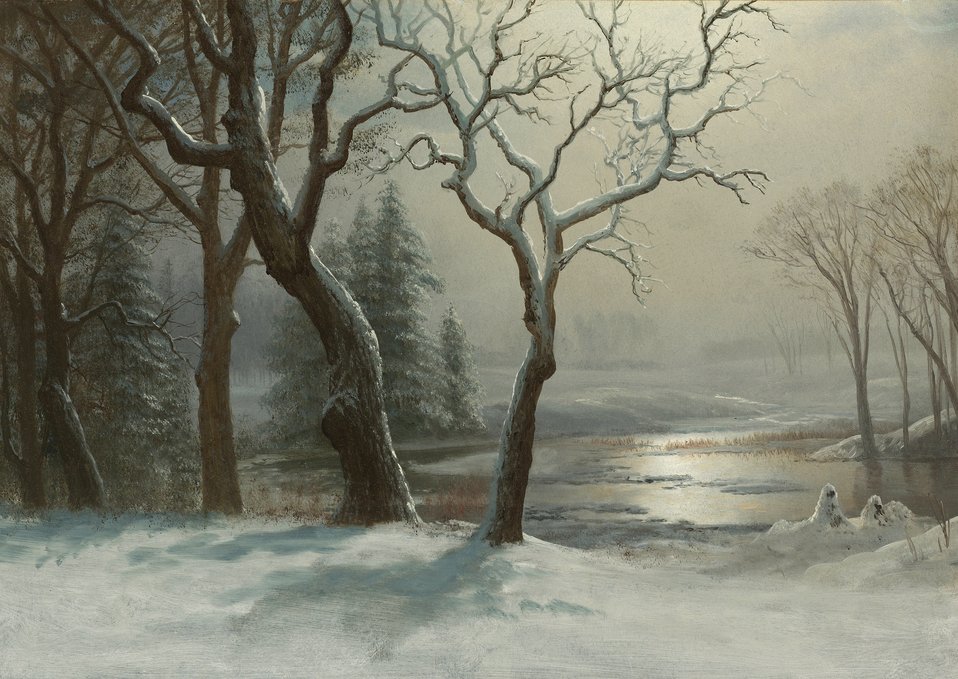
Albert Bierstadt - Winter in Yosemite